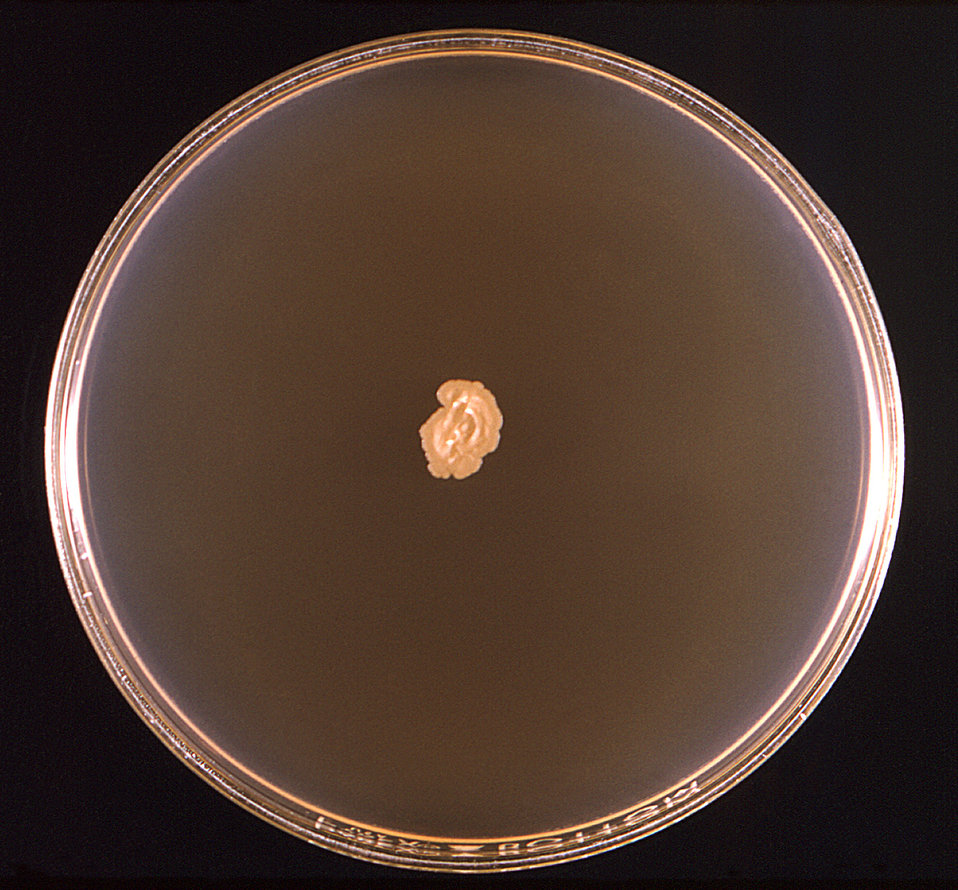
This 1971 image depicted a frontal view of a Petri dish culture in which a small colony of Prototheca moriformis algal organisms had been cultivated.